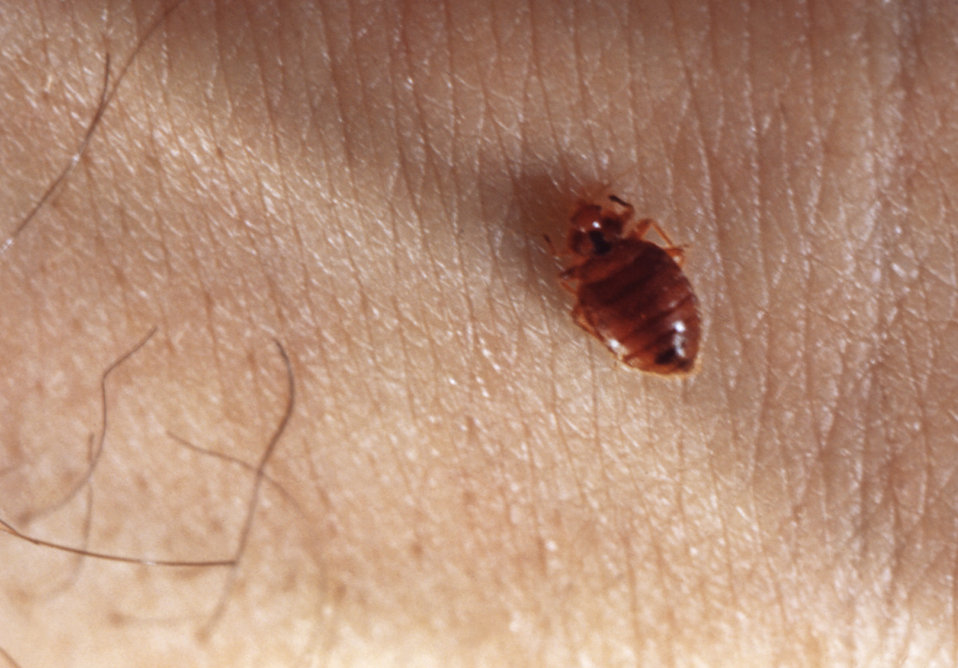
This bedbug, Cimex lectularius, was photographed in 1972 during a study of disease carrying pests in migrant labor camps.